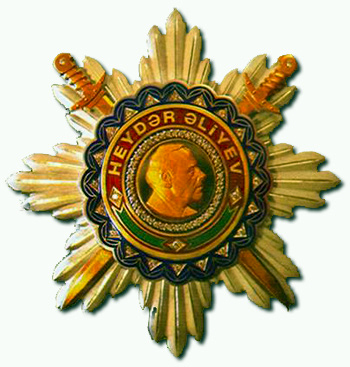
The order of Heydar Aliyev Русский: Орден Гейдара Алиева